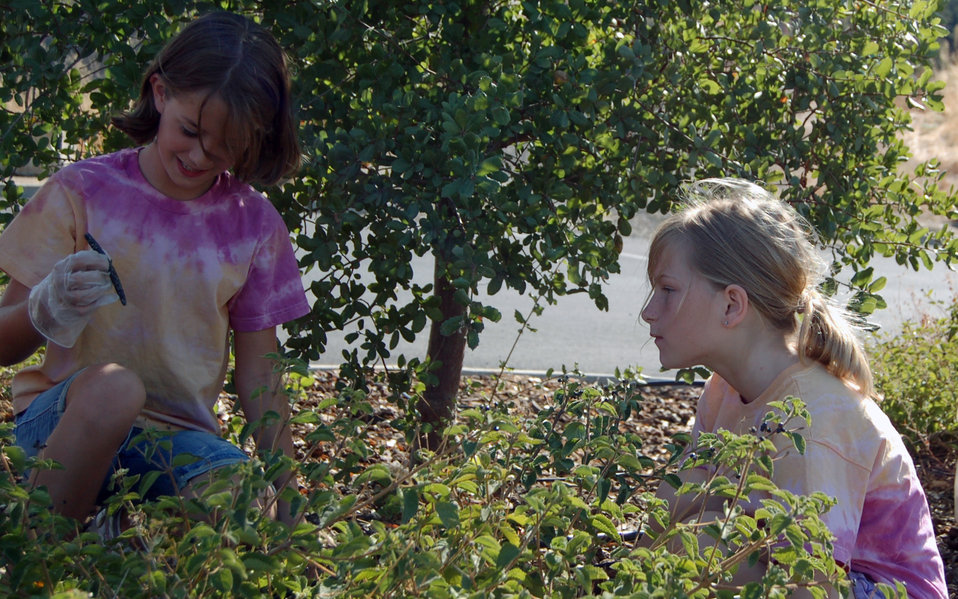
LAKE KAWEAH, Calif. (Sept. 25, 2010) -- Young volunteers pick up litter during the 17th annual National Public Lands Day here Sept. 25. Park rangers from the U.S. Army Corps of Engineers Sacramento District and more than 320 volunteers celebrated the day with cleanup efforts at the park. The Corps has been involved with National Public Lands Day since its inception in 1994 and has consistently been one of the largest providers of sites and volunteers participating in the event. This year, the celebration coincides with California Coastal Cleanup Day and President Barack Obama’s America’s Great Outdoors Initiative, an effort to promote the conservation of outdoor spaces and reconnect Americans to the outdoors.